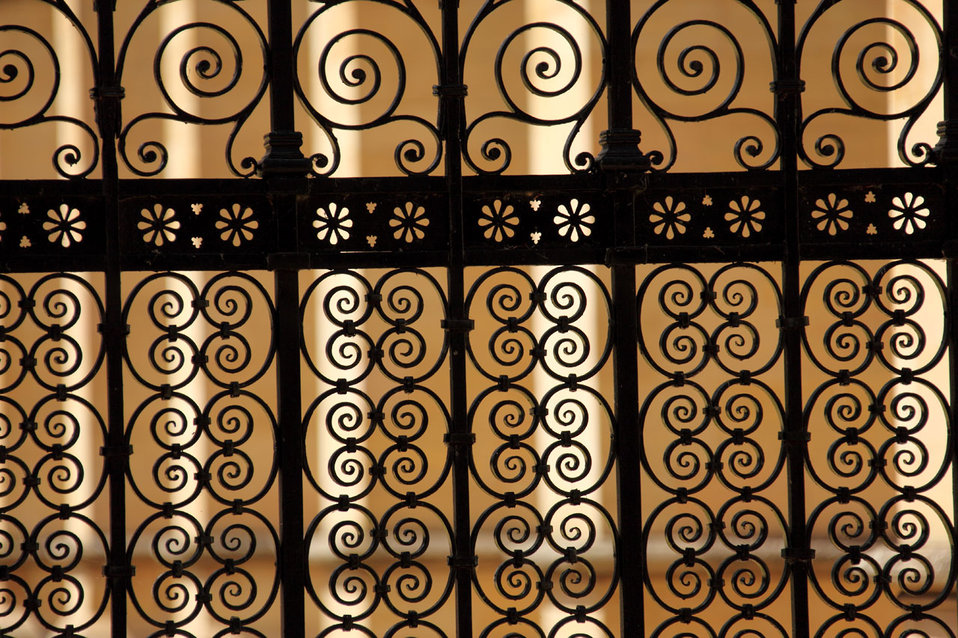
Wrought iron background image.